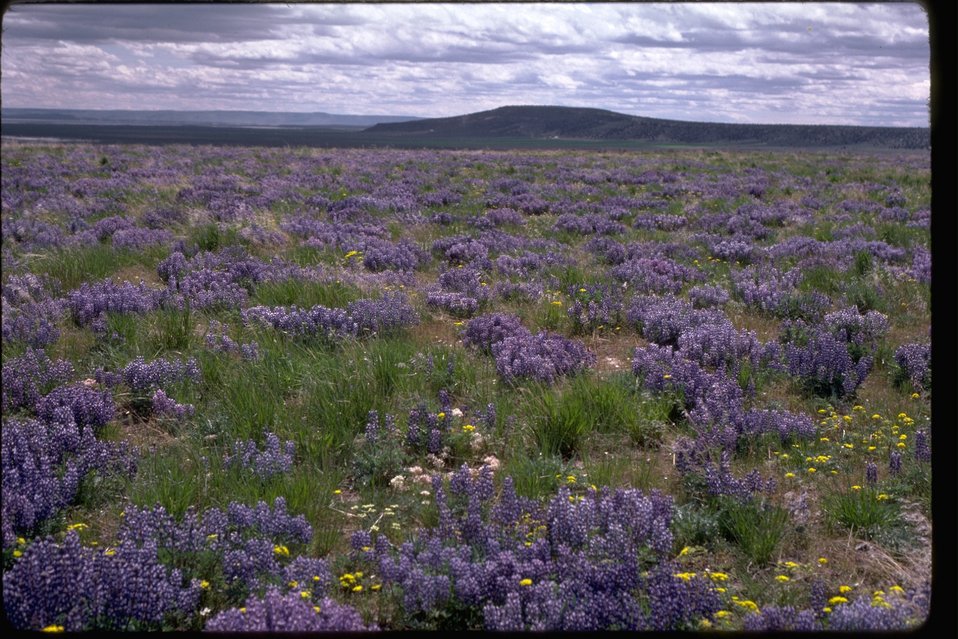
Field of Lupine following wild fire at Wright's Point area near Burns, Oregon.